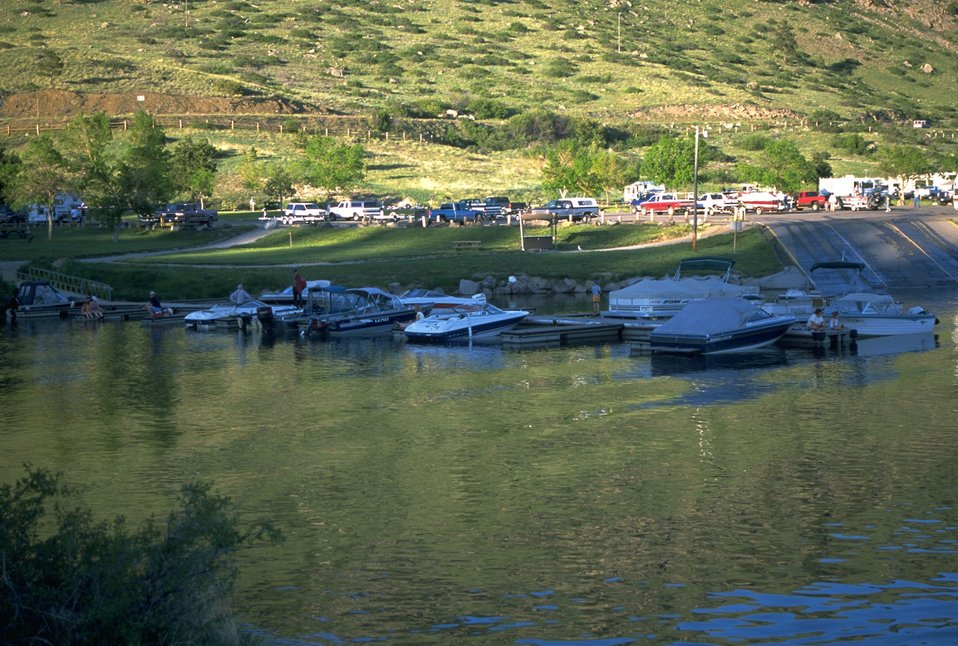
Boats lined up at the Marina at Holter Lake